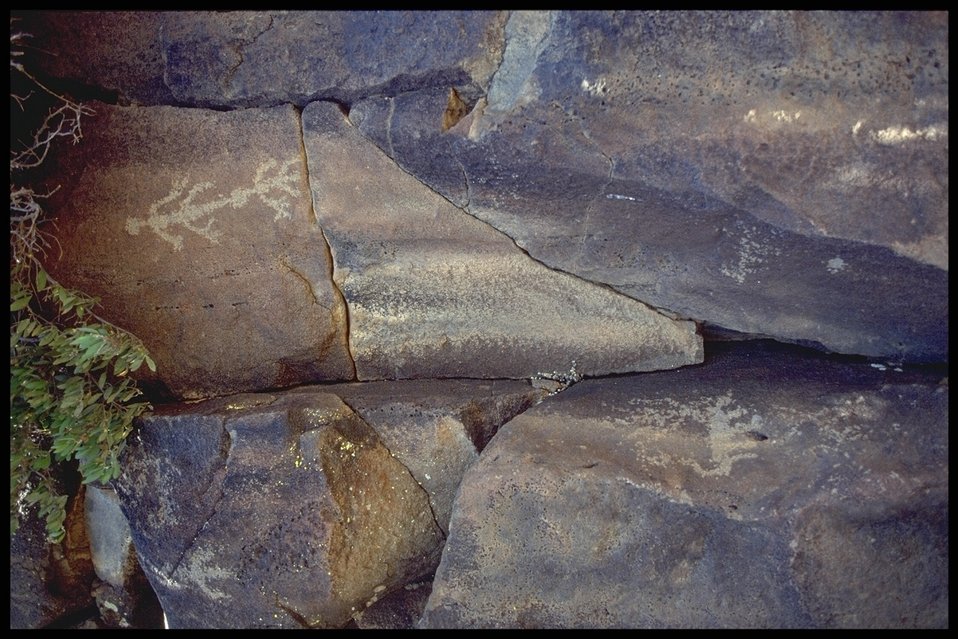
Petroglphs (Rock Art) can be found throughout the 71,000 Acres that make up the Agua Fria National Monument.